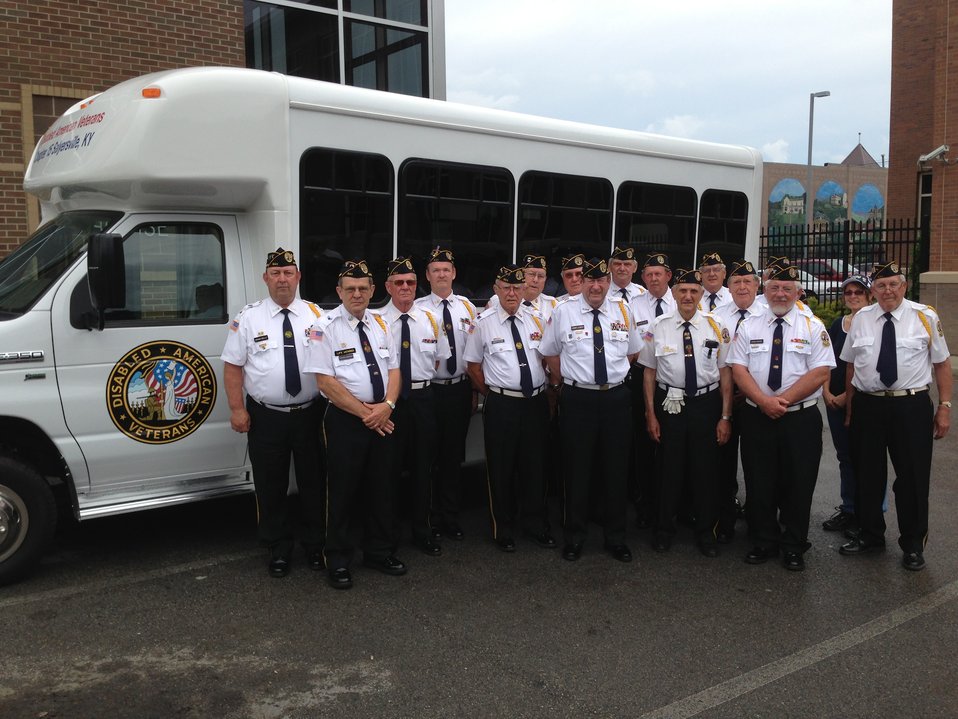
Kentucky DAV members with their new bus.